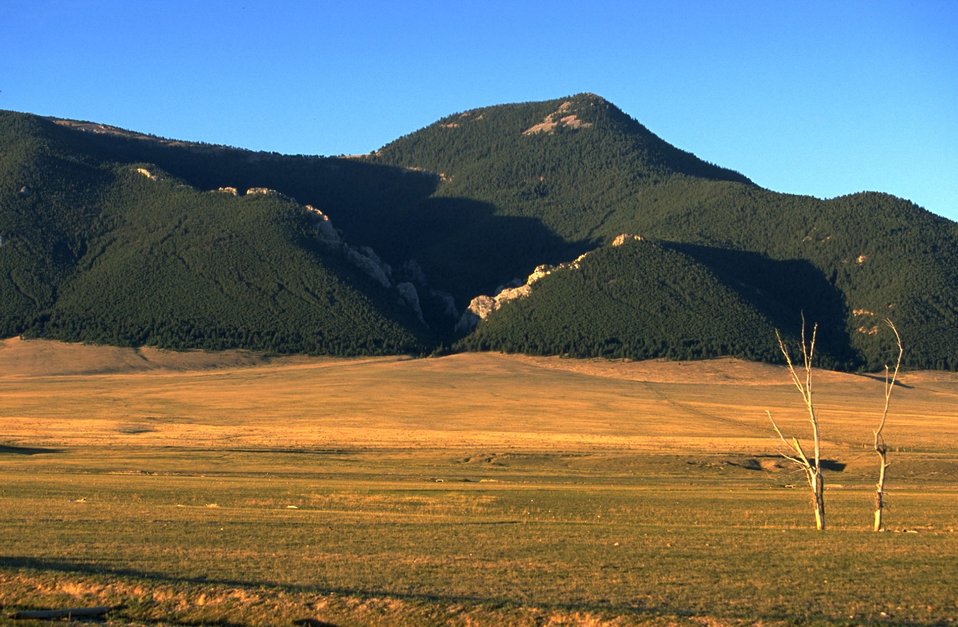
Grassy slope leading to forested mountains